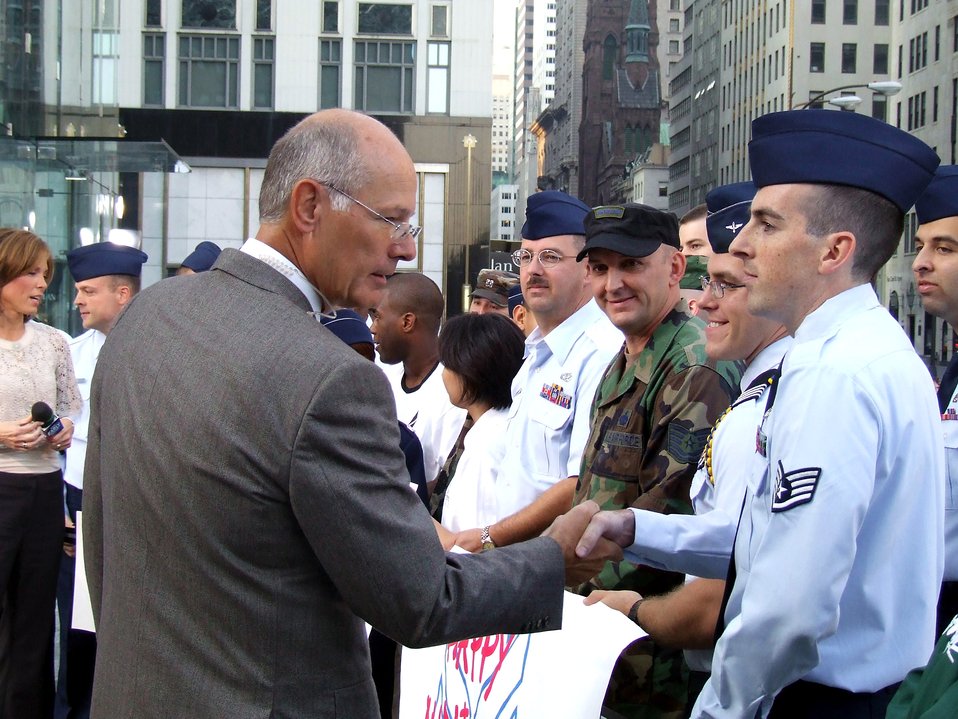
CBS' 'The Early Show' recognizes AF 60th anniversary

CBS'